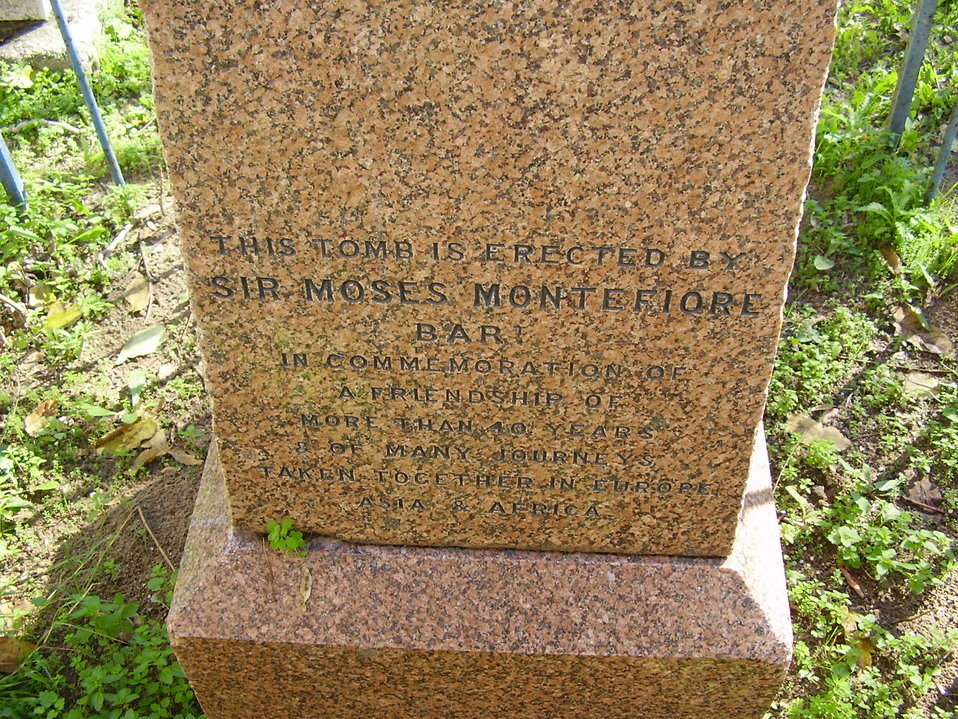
the epitaph on the back of dr. Thomas Hodgkin's tomb, Jaffa, Israel.